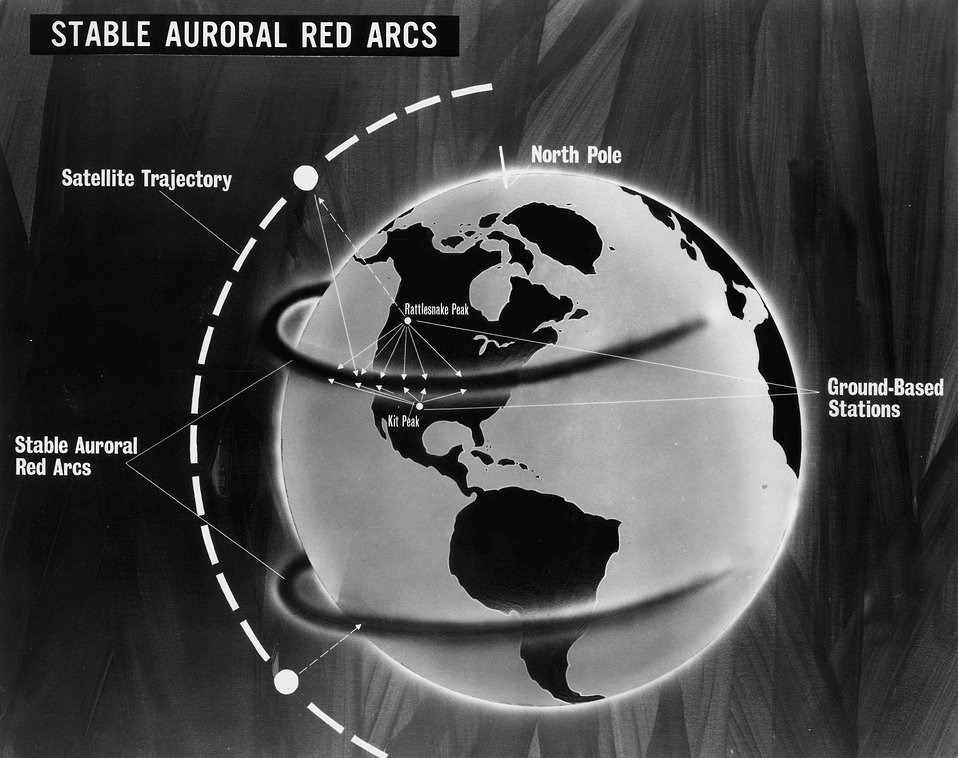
The two bands shown encircling the earth at mid-latitudes are called stable auroral red arcs. c. 1970